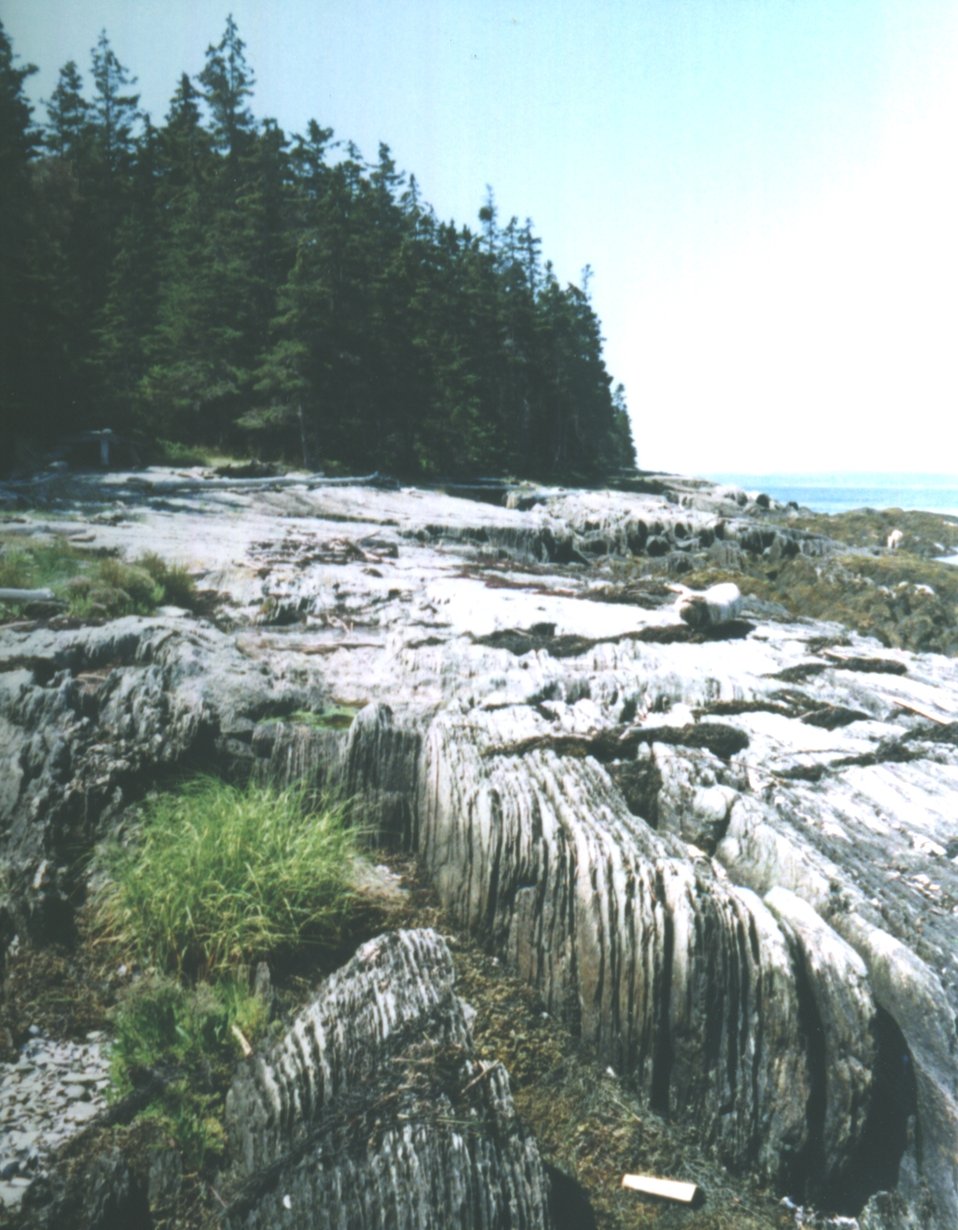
Vertical slate on 700 Acre Island. Erosion of this material provides sediment for Philbrook Cove Beach.